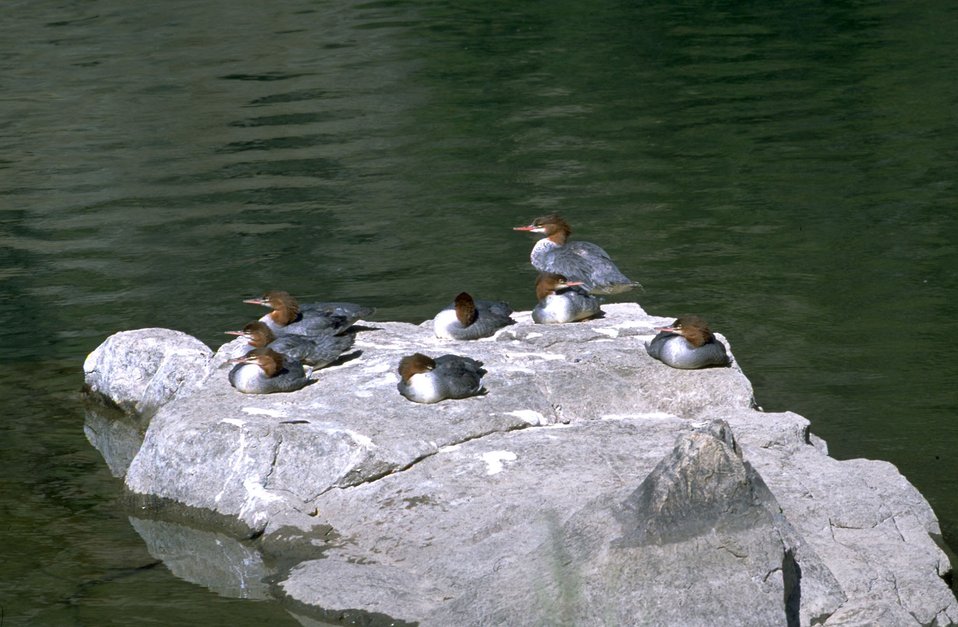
Mallards sunbathing on the Madison River